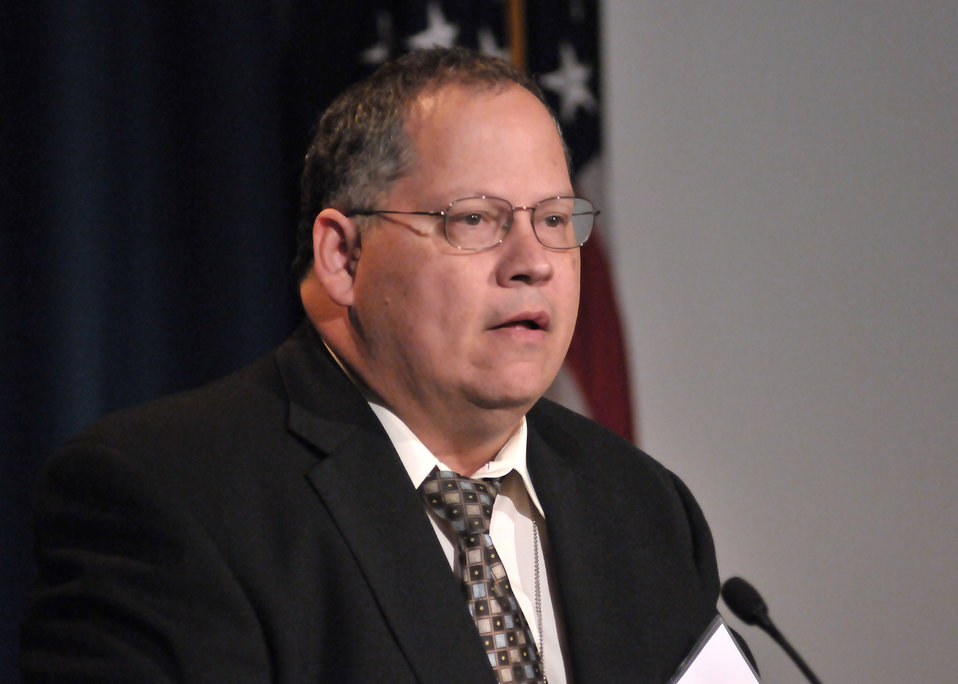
Patrick Davis, Program Manager for the Vehicle Technologies Program